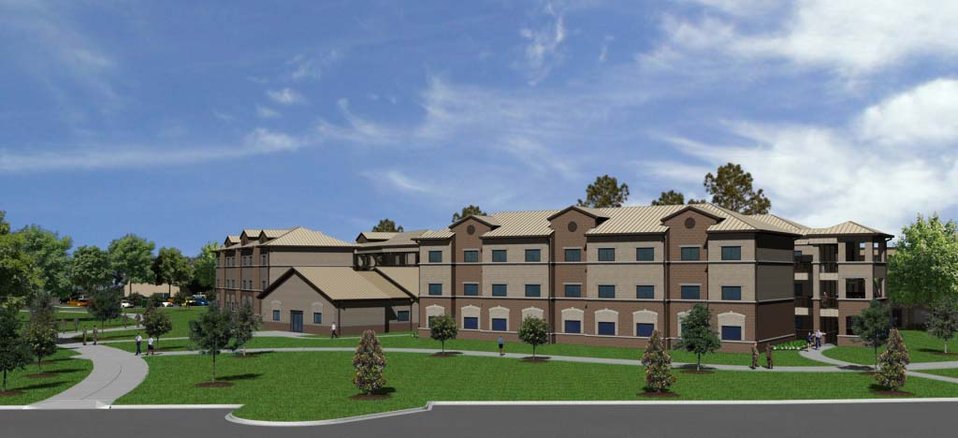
Shaw selected as 'showcase' dormitory

This artist's drawing shows the new 144-room dormitory that will showcase the Air Force's success in areas of energy and sustainable development. On March 30, officials at Shaw Air Force Base, S.C., awarded an 18-month contract to Hitt Contracting to build the dormitory. It is projected to gain a Leadership in Energy and Environmental Design silver certification upon completion.